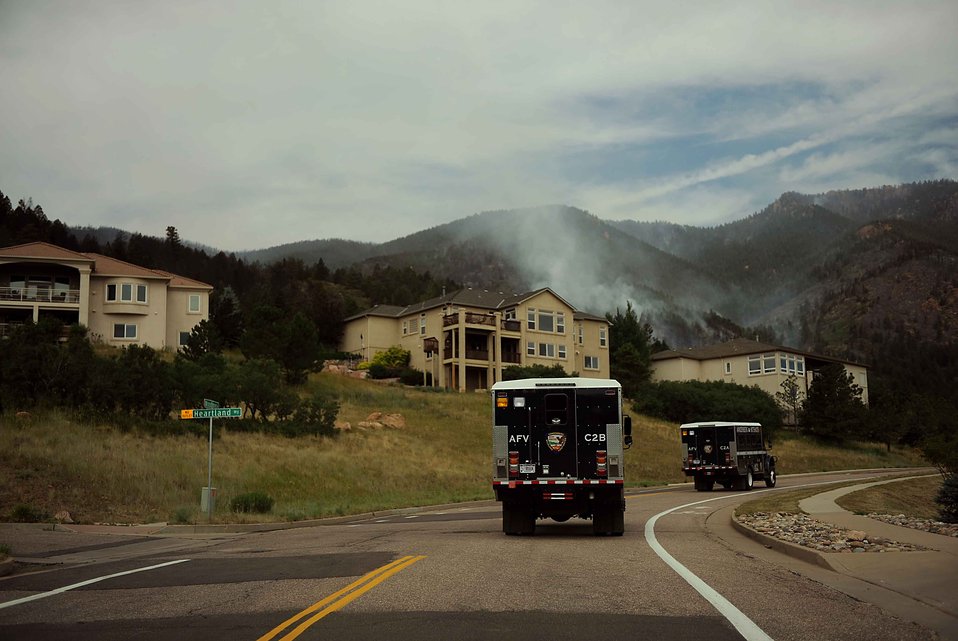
Toward the flames

Driving into the Mount Saint Francois area of Colorado Springs, Colo., firefighters with the Vandenberg Air Force Base, Calif., Hot Shots drive to the site where they will cut a fire line while helping to battle several fires in Waldo Canyon on June 28, 2012. Currently, more than 90 firefighters from the U.S. Air Force Academy, along with assets from Air Force Space Command; F.E. Warren Air Force Base, Wyo.; Fort Carson, Colo.; and the local community continue to fight the Waldo Canyon fire.